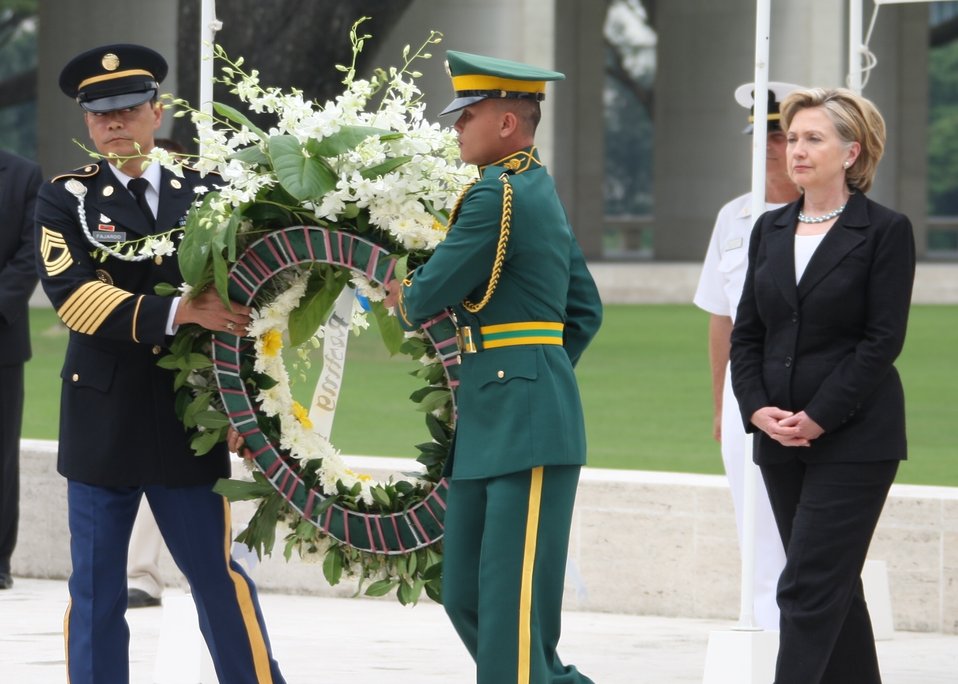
Secretary Clinton Observes a Wreath

U.S. Secretary of State Hillary Rodham Clinton Secretary Clinton observes a wreath-laying ceremony for fallen soldiers and allied forces in World War II at the American Cemetery in Manila, Philippines, November 12, 2009.